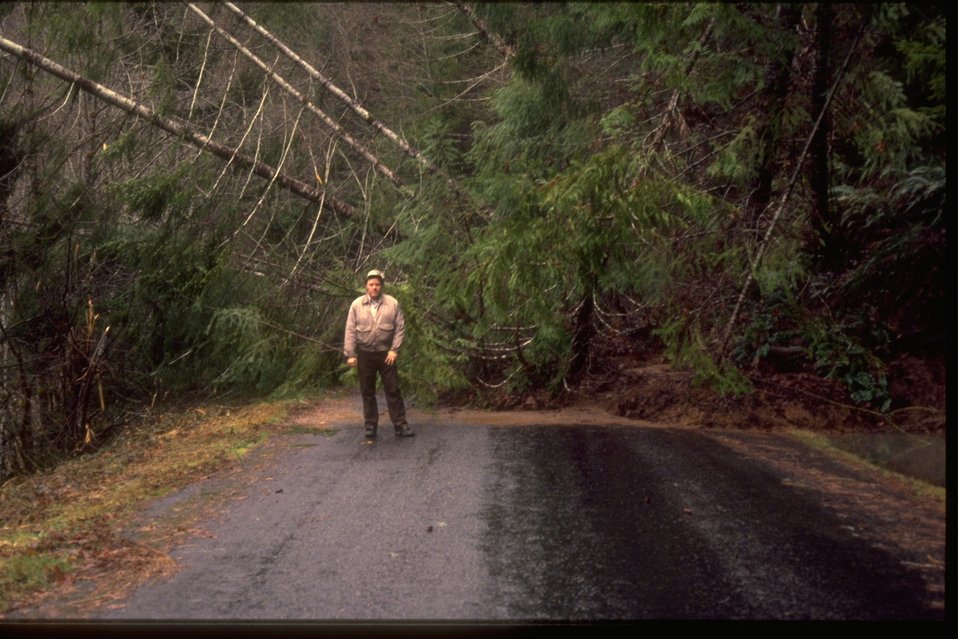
Landslide blocks road.